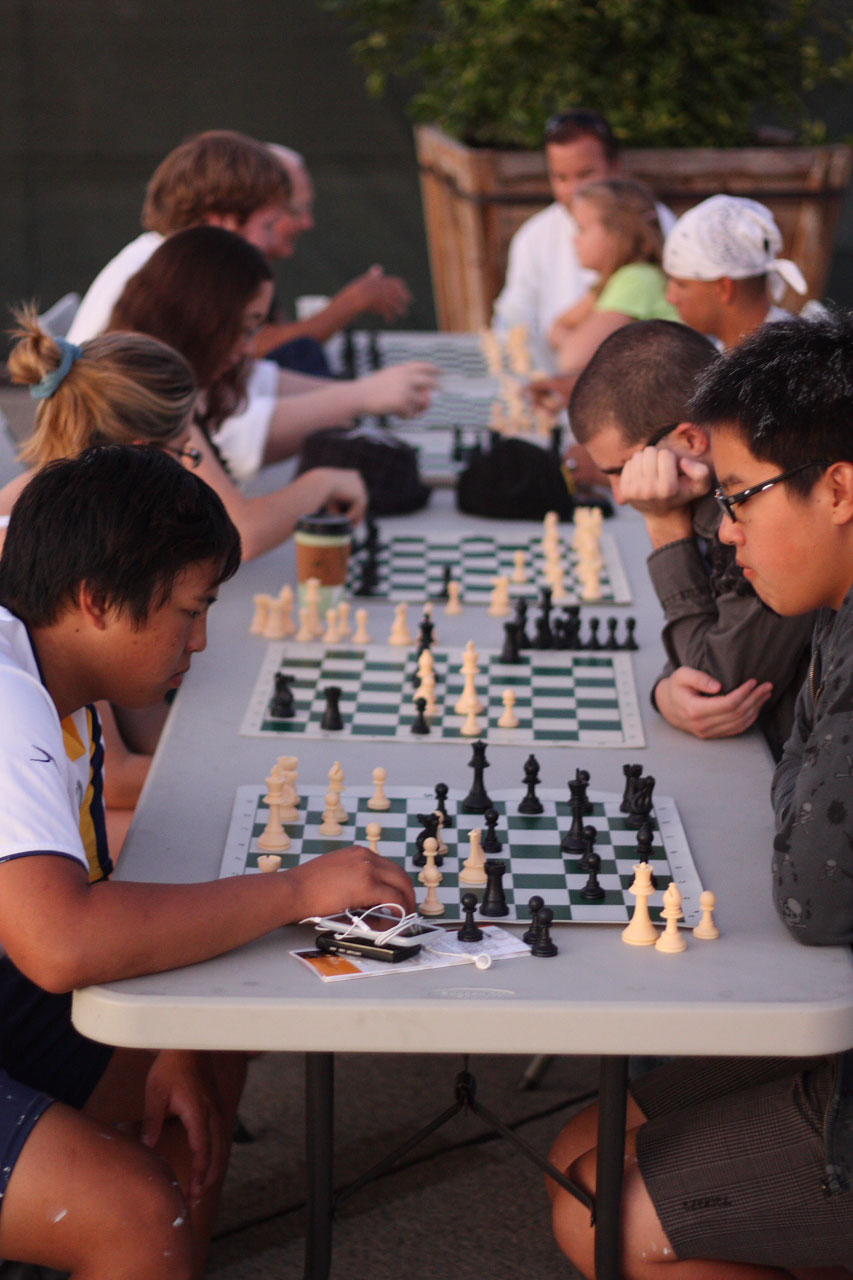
Playing chess

Chess players match wits at great park in irvine, california.